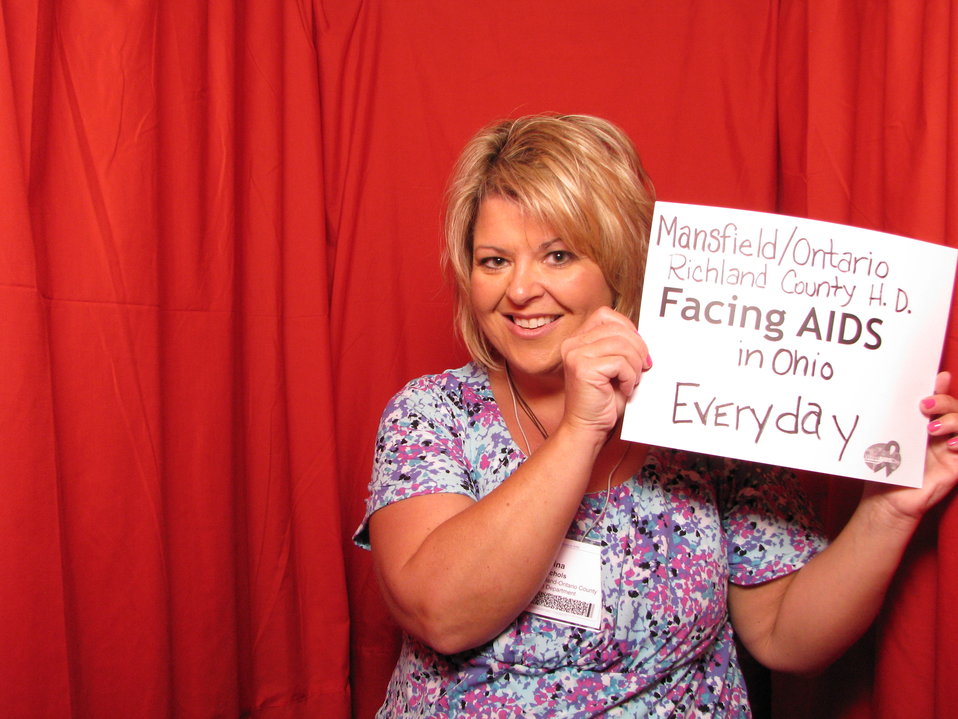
Mansfield/Ontario Richland County H.D. FACING AIDS in Ohio, EVERYDAY.

From the AIDS.gov photo booth at the U.S. Conference on AIDS, September 2010 (Orlando, FL).